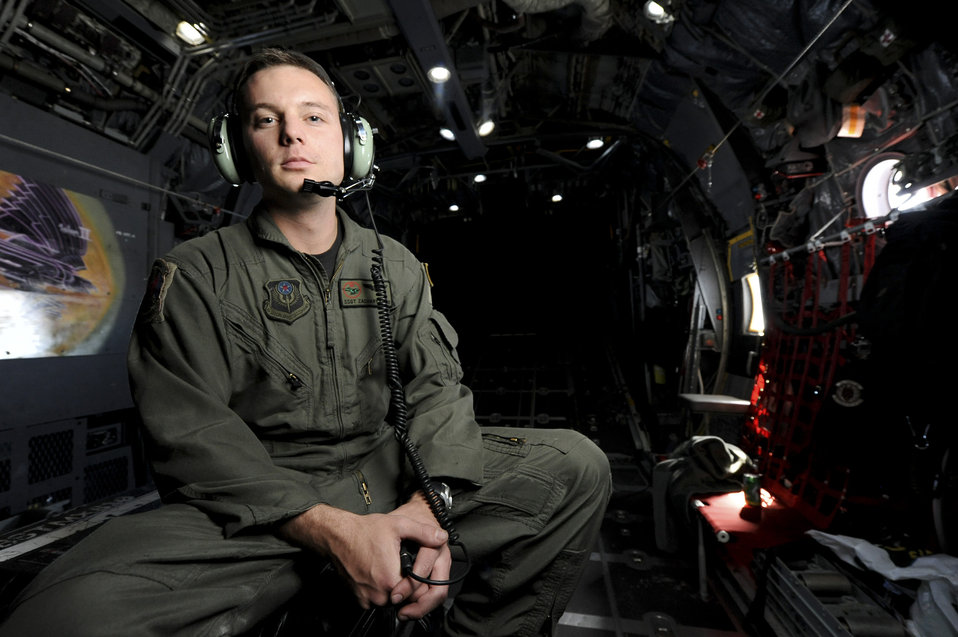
Squadron marks 30 years of honoring fallen comrades

Staff Sgt. Zachary Kelhi, a loadmaster with the 1st Special Operations Squadron, assisted in the release of a wreath from an MC-130H Combat Talon II Feb. 26, 2011, in memory of fallen brethren lost 30 years ago, when a 1st SOS MC-130E, call sign STRAY 59, crashed during an exercise, killing eight crewmembers and 15 passengers.